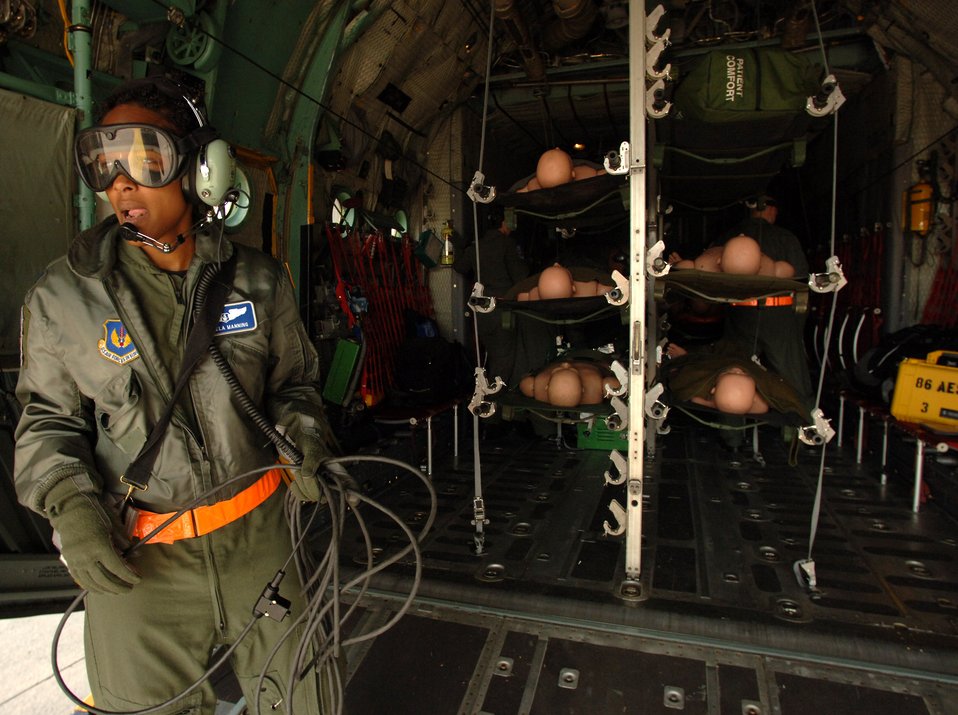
Practice makes perfect

Following an aeromedical evacuation training sortie Oct 31 from Ramstein Air Base, Germany, Capt. Angela Manning awaits clearance before directing an engines-running offload of medical equipment used during the flight. Captain Manning is assigned to the 86th Aeromedical Evacuation Squadron at Ramstein AB.